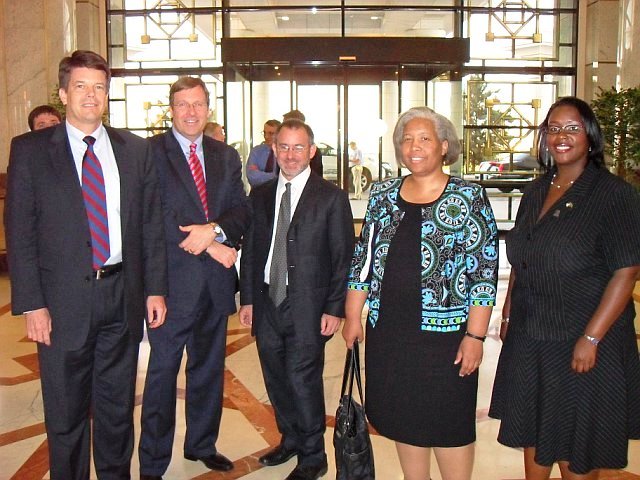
U.S.-Turkmenistan Business Council Participants Pose for a Photo

Participants of the U.S.-Turkmenistan Business Council pose for a photo in a hotel in Ashgabat, Turkmenistan, on June 16, 2010.